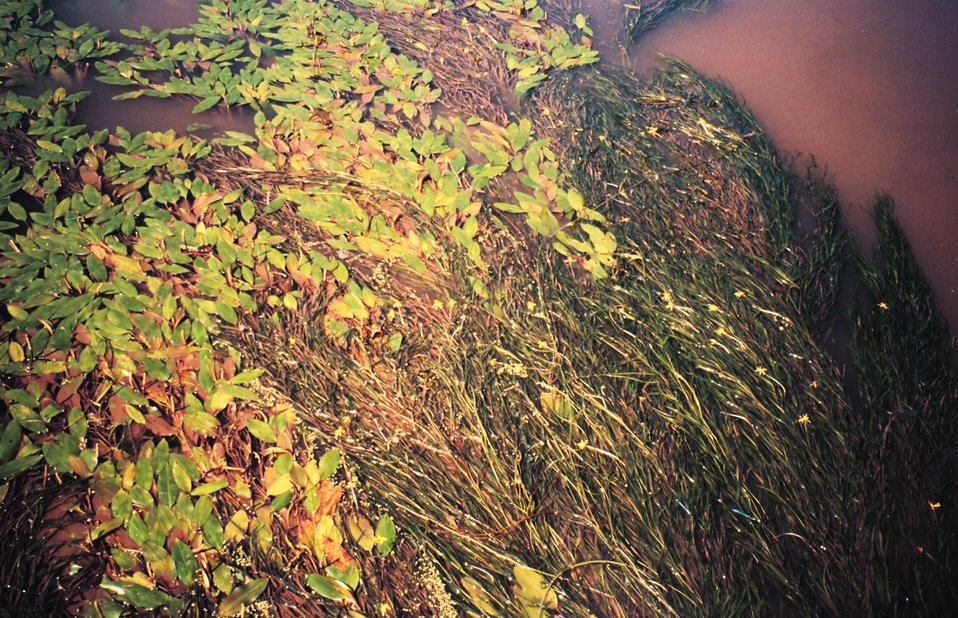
Submerged aquatic vegetation within a pond in the Mississippi Delta